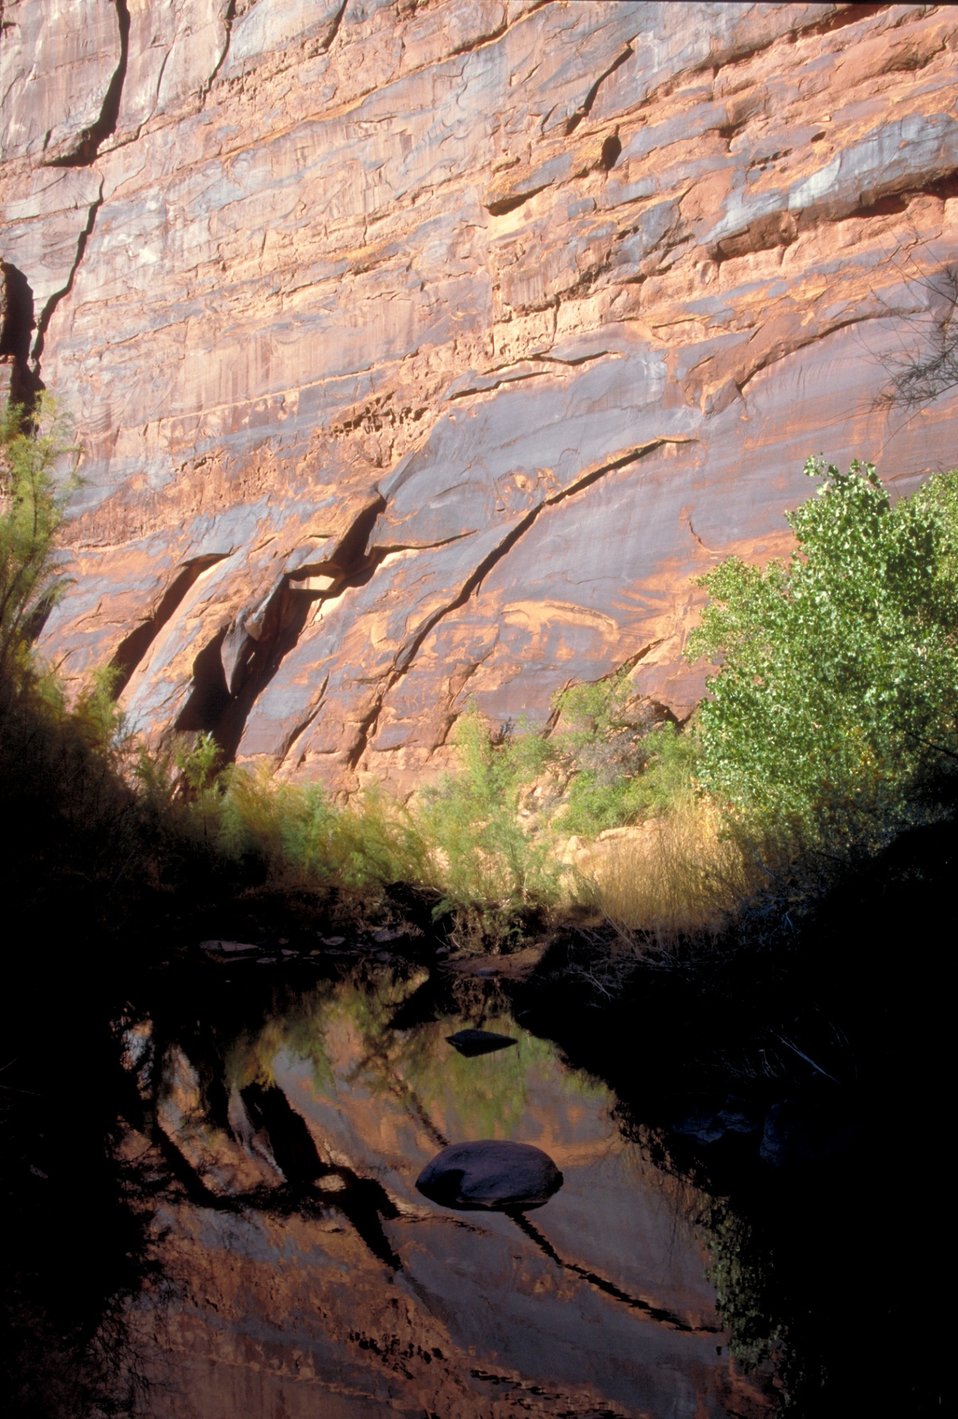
Stream reflections in Hunter Canyon near Moab, Utah.